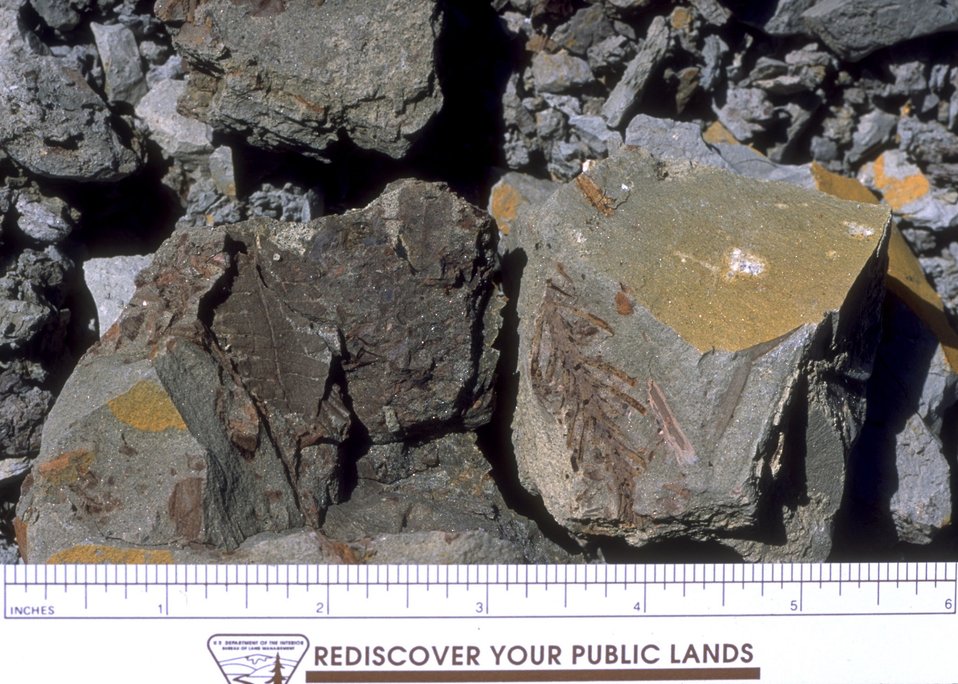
Close up of fossil vegetation, Cedar Ridge Paleo area, Worland Field Office.